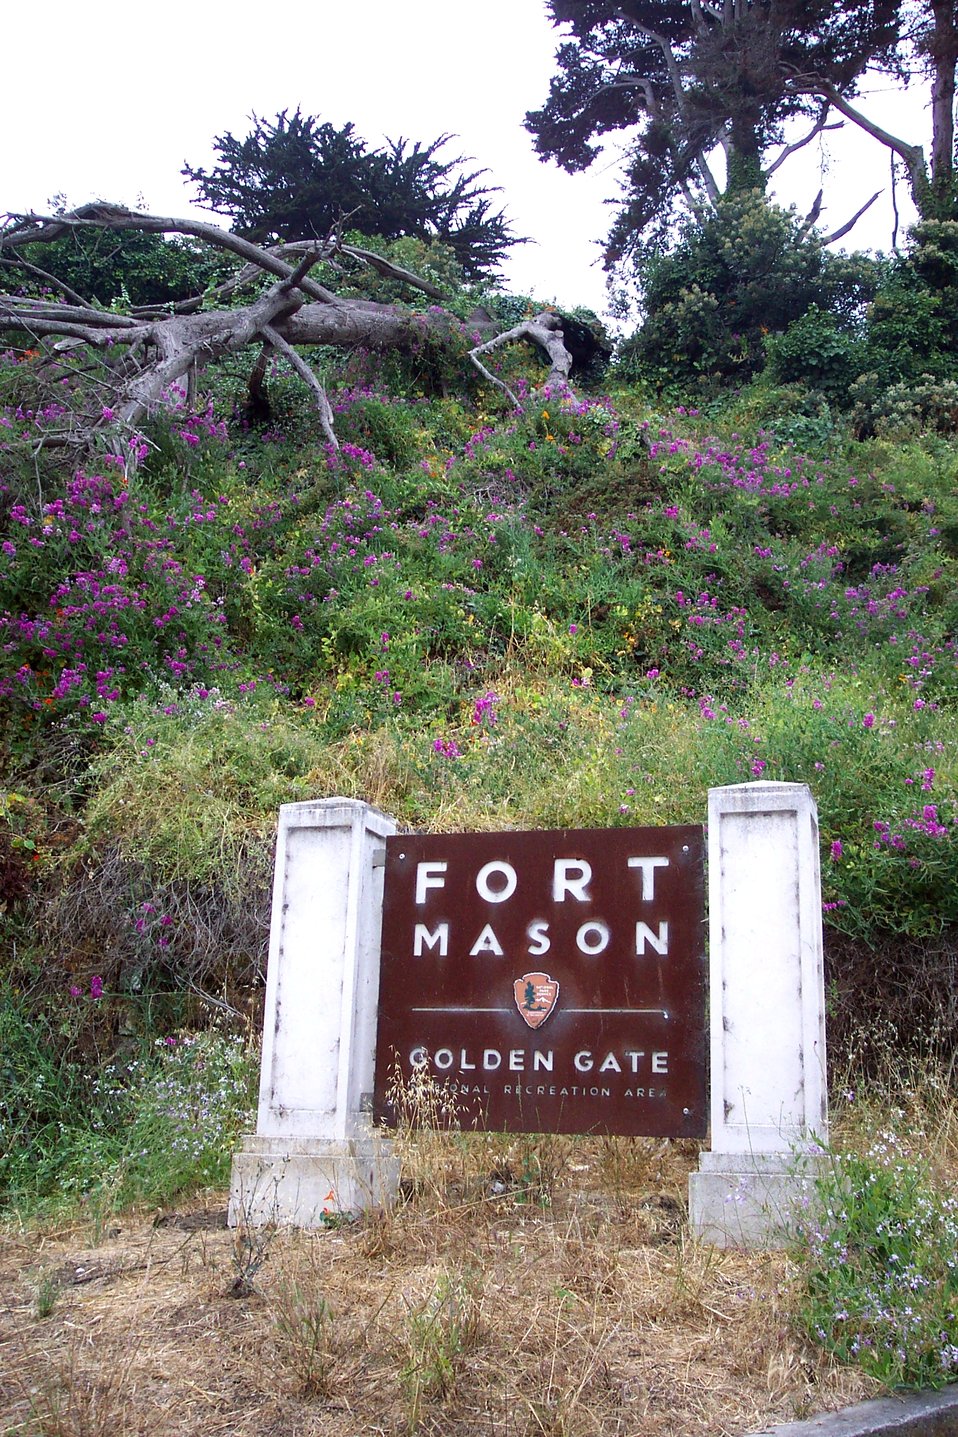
A flower bedecked hillside adorns the entrance to Fort Mason, now part of the Golden Gate National Recreation Area. During World War II, Fort Mason served as the shipping point for 1.5 million troops who were shipped to Pacific war zones.